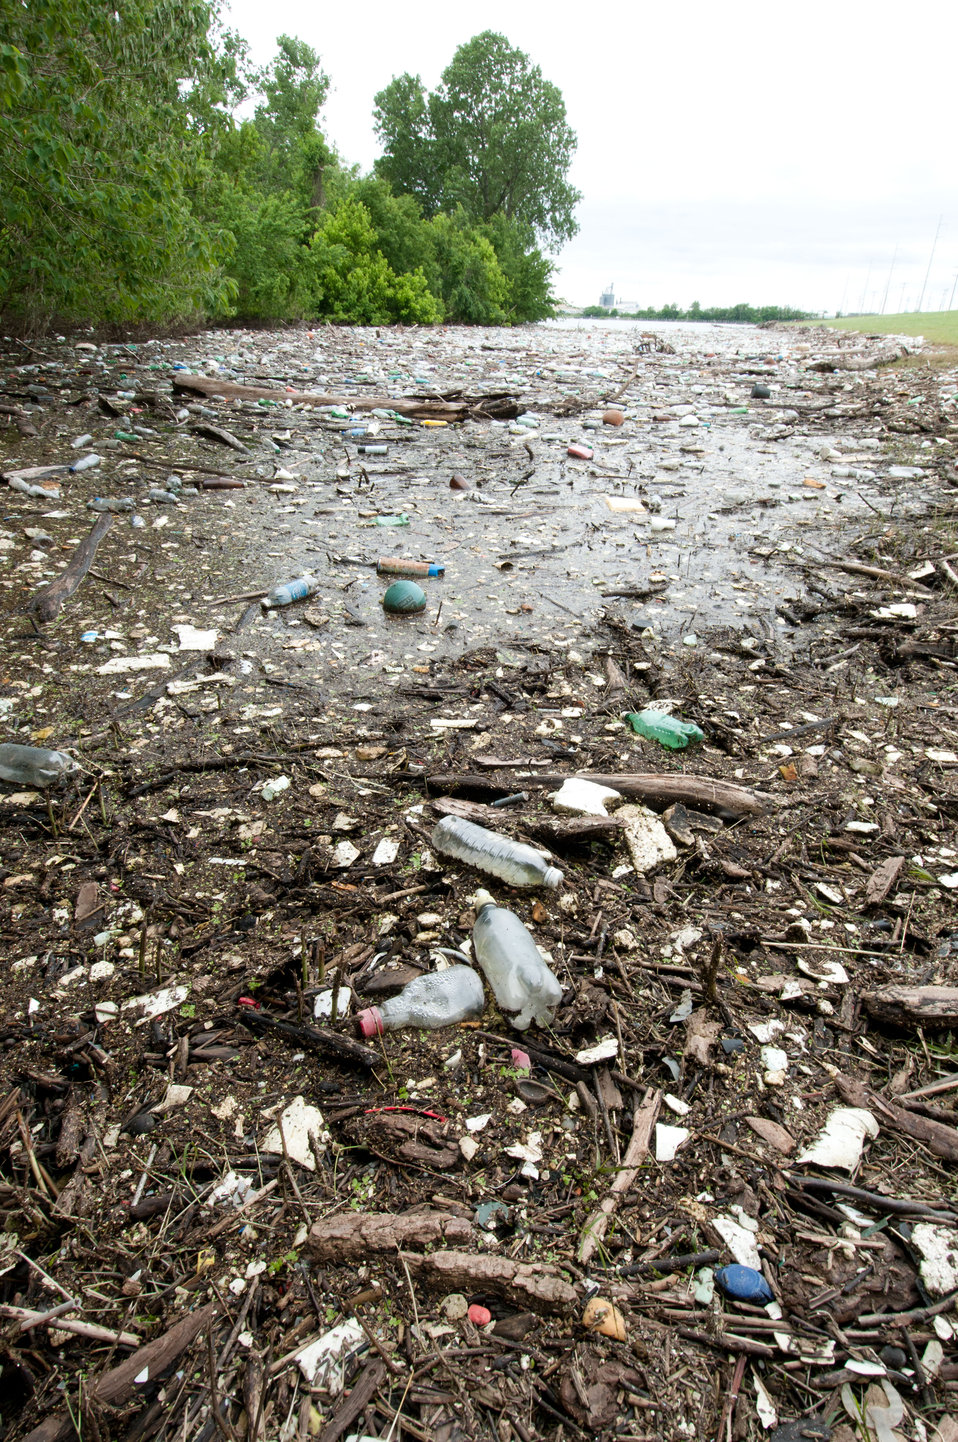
The high flooding of the Mississippi River carried debris from the new shores, plus active storm drains brought with it the litter, all flowing into eddies and corners of lagoons, such as this lake; a tributary to the Mississippi River off the Presidents Island causeway near Memphis, TN on Saturday, May 14. 2011. The cleanup of this is one type of cost associated with floods of this magnitude.